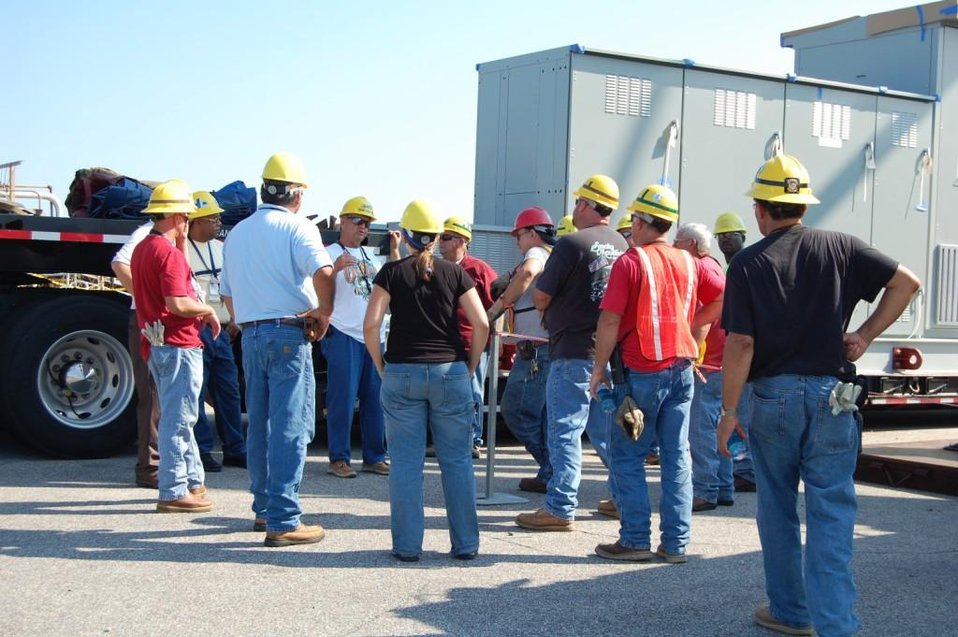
Savannah Safety Briefing

Recovery Act workers with DOE contractor Savannah River Remediation join veteran workers at the Savannah River Site in a safety briefing before completing upgrades to one of the site’s 49 waste tanks.